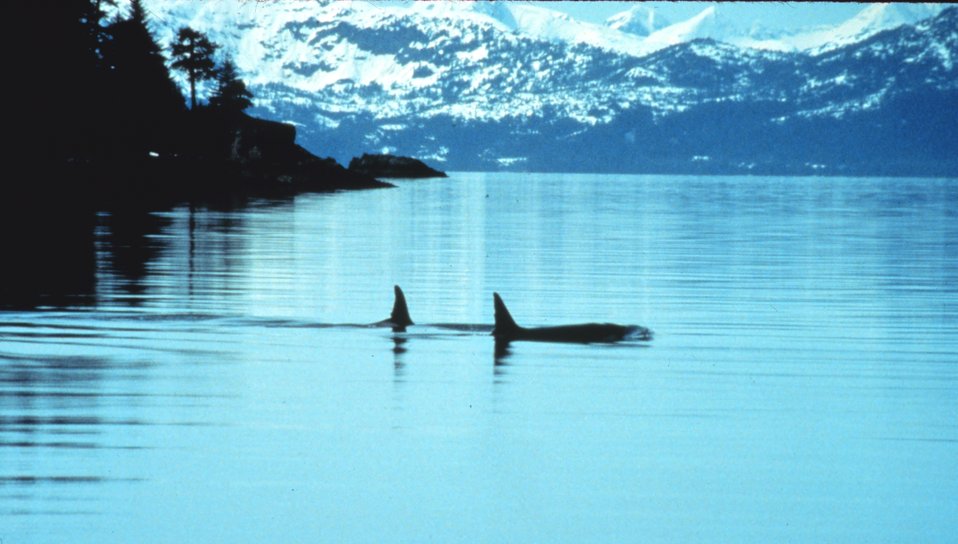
Two killer whales in Prince William Sound